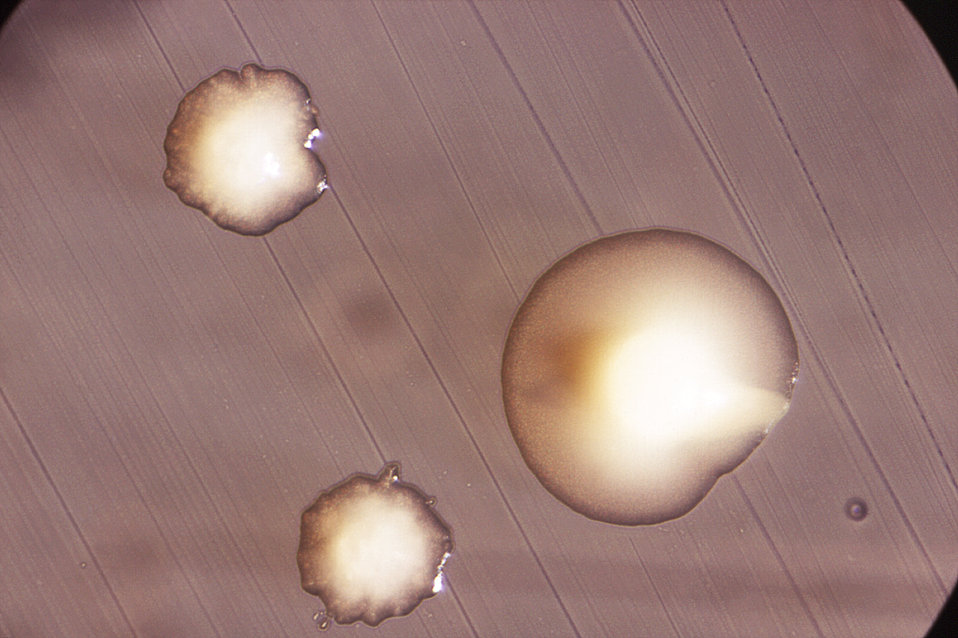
Magnified 12.5X, this image depicts the morphologic characteristics displayed by three mature Gram-positive, Actinomyces naeslundi bacterial colonies, of the 'rough' strain, W-1096, which were cultivated on an unknown culture medium.